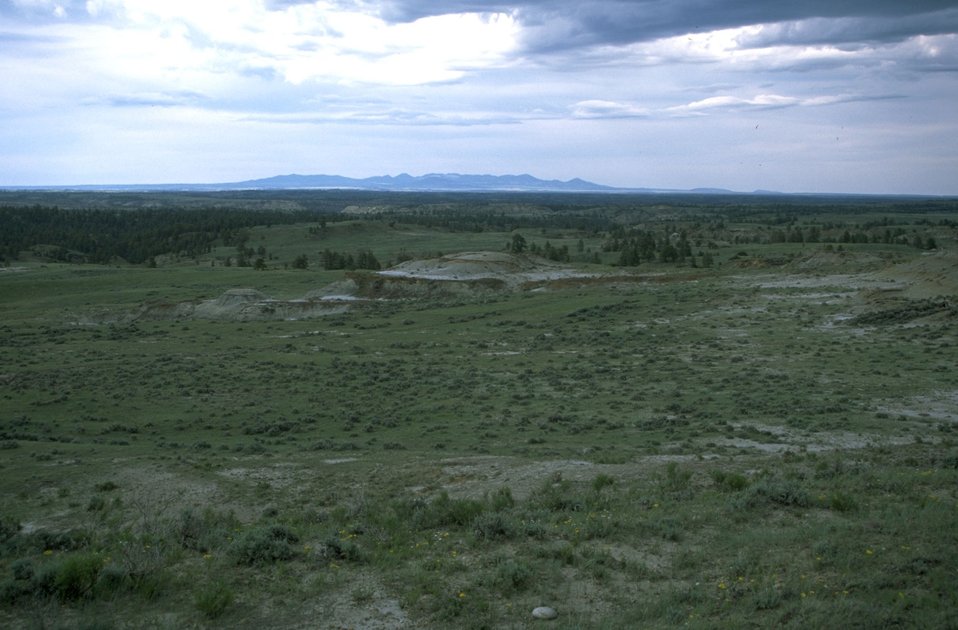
Sagebrush range in central Montana with Little Rocky Mountains in the background